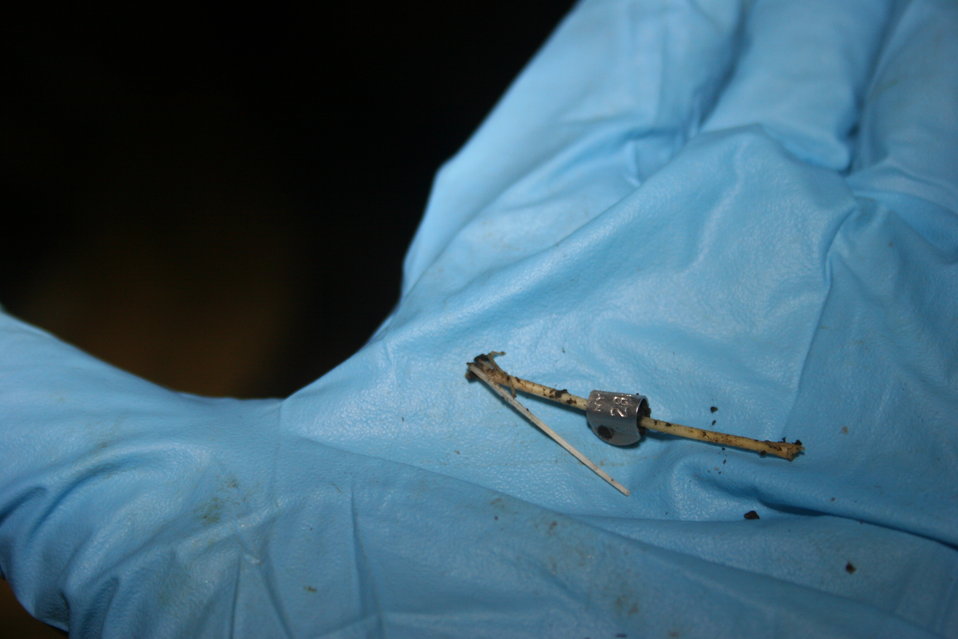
Biologist holds wing bone with wing band

Biologist holds bat wing bone with wing band still attached. Wing bands are attached to bats' wings to help biologists track their movement. The bands move freely on live bats' wings, so as not to disrupt flight. This bat died in Mt. Aeolus Cave, and biologists will use the number on the band to track where the bat came from.